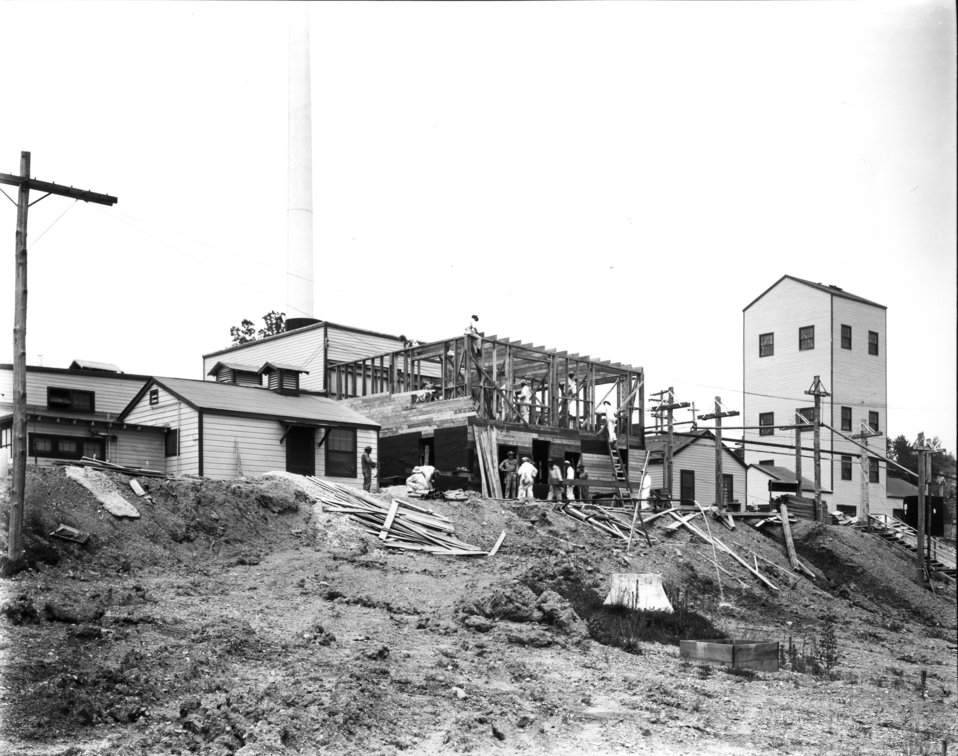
X-10 at Oak Ridge